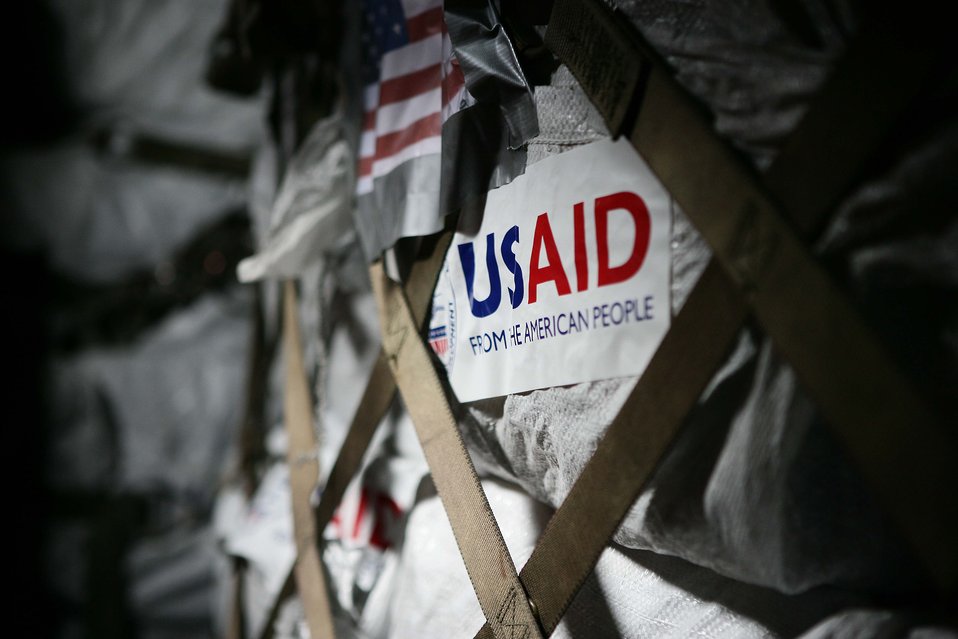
First C-130 crew provides humanitarian assistance to Burma

Supplies from the U.S. Agency for International Development from the American People is loaded into a C-130 Hercules for to the country of Burma May 12 at the Yangon International Airport. The plane carried water, food and medical supplies to provide relief to Burma, which was struck by Cyclone Nargis May 28.